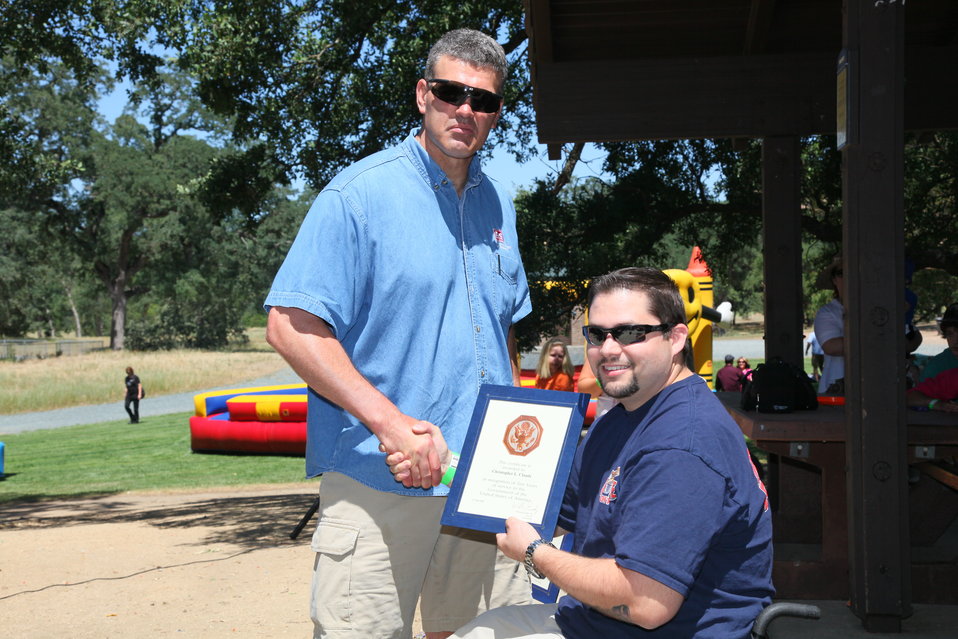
2011 Annual Picnic